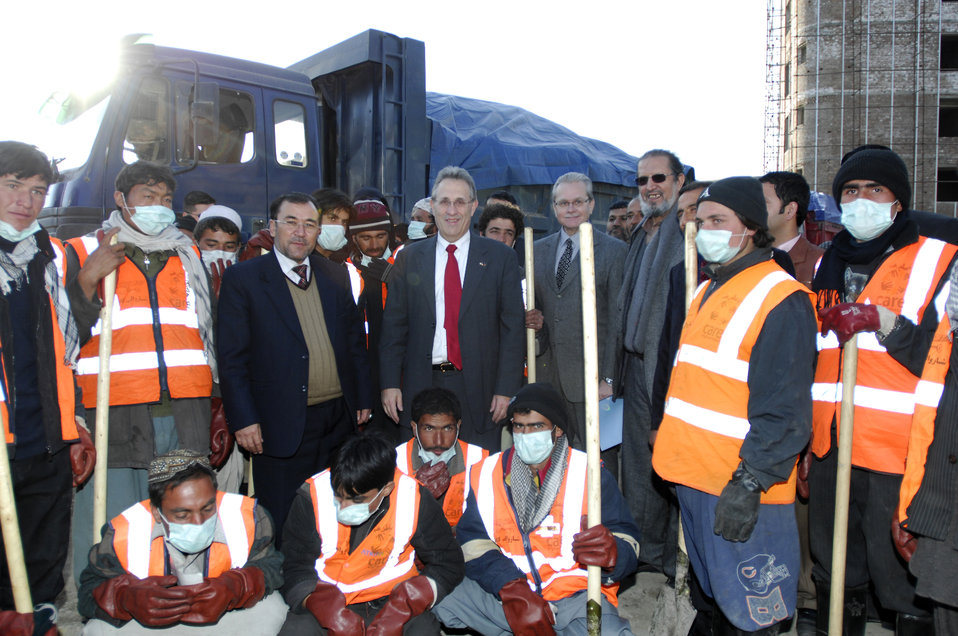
Care43